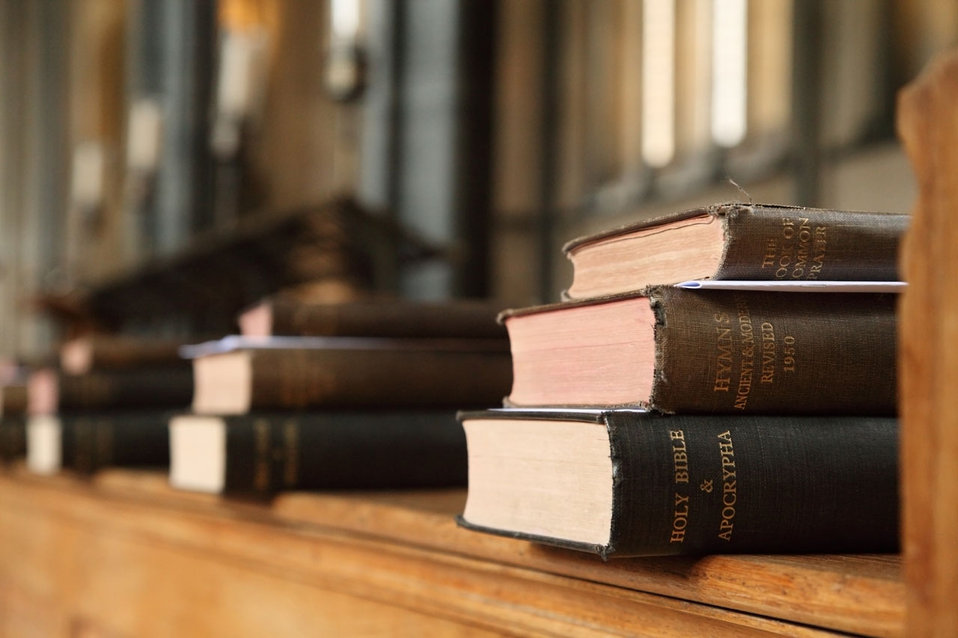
Books in church

Holy bible, hymns and common prayer books stacked on each other in church.